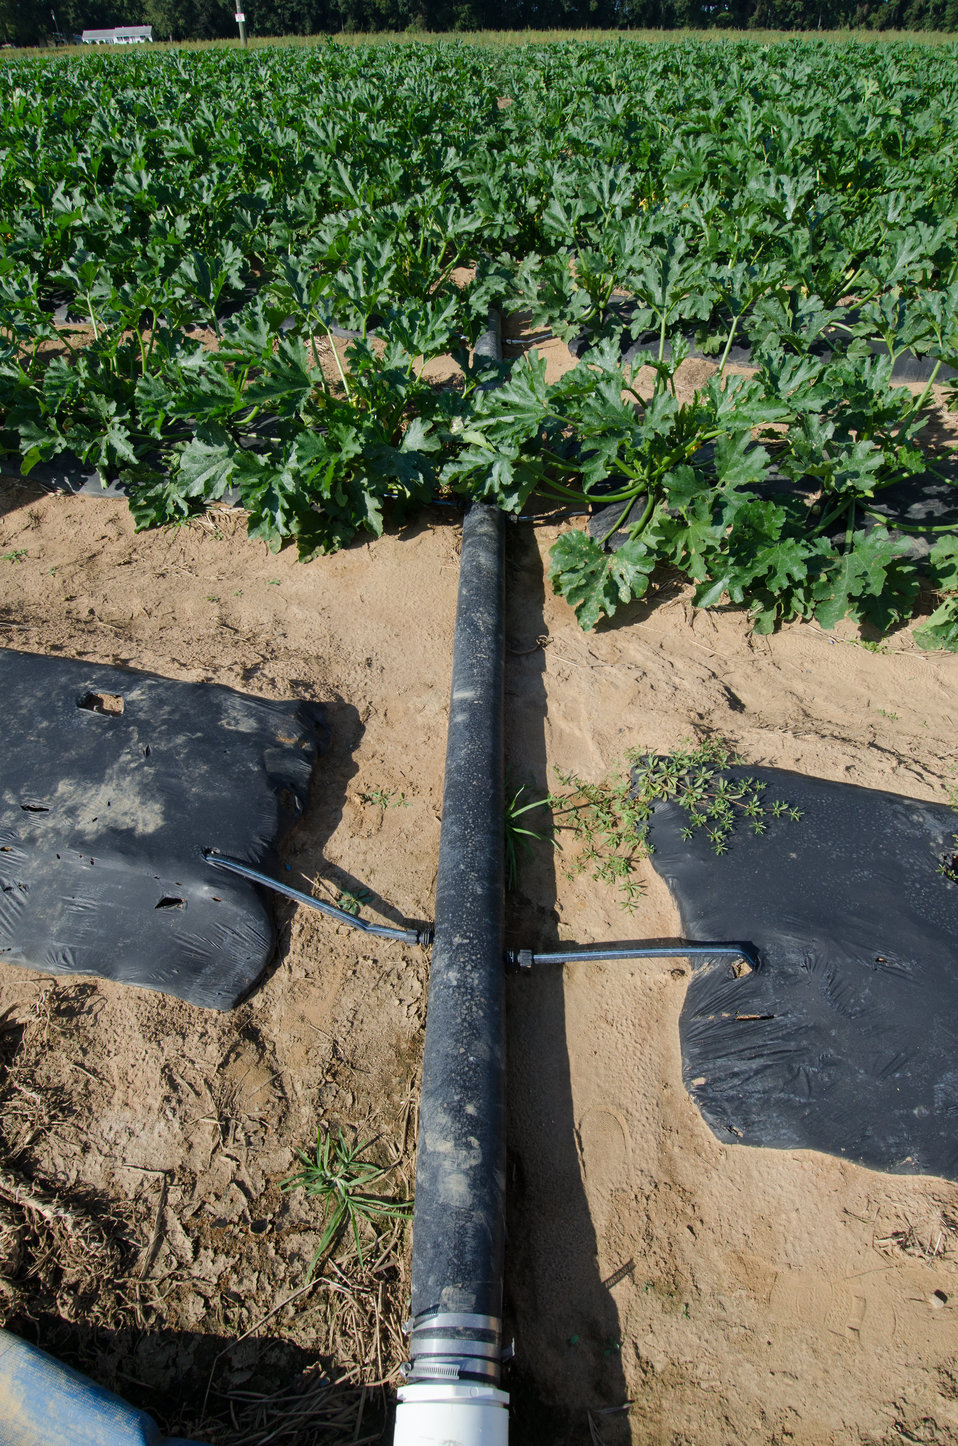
Kirby Farms third-generation family farm in Mechanicsville, VA, uses micro irrigation (drip watering) and plastic mulch (row covering) to efficiently grow green zucchini squash, on Friday, Sept 20, 2013. Water is pumped through a filtration/regulator system to flexible distribution pipes and hard connectors. Emitter hoses can be driven in where needed. Pressurized hoses emit water at a very slow rate near the base of the plants. Computers or timers provide additional controls. A micro irrigation system, also known as drip or trickle irrigation, is used to water directly to the plant root zone utilizing surface or subsurface applicators. For more information please see www.nrcs.usda.gov/Internet/FSE DOCUMENTS/nrcs141p2 024038...
Plastic sheeting is a form of mulch. It conserves soil moisture and reduces energy
use associated with irrigation, moderates soil temperature, provide erosion control, suppresses weed growth, facilitates the establishment of vegetative cover, improves soil quality, and reduces airborne particulates.